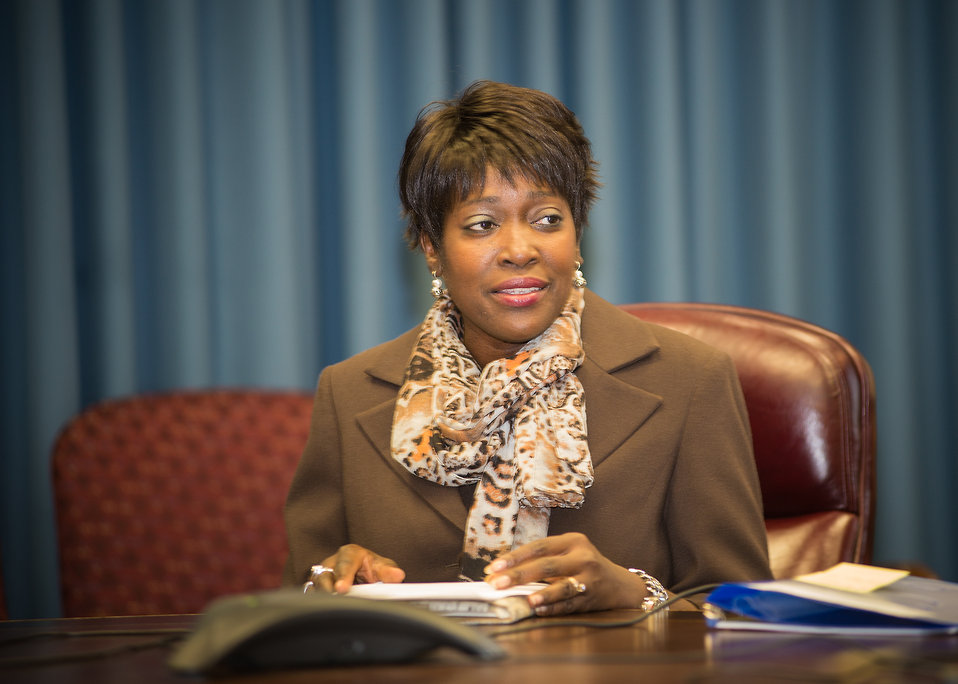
Carolyn Parker, Director, Office of Advocacy and Outreach greeted students interning at USDA for the Fall 2013 semester through the Hispanic Association of Colleges and Universities (HACU) National Internship Program. This program is a partnership between the USDA and HACU that provides an excellent opportunity for the Department to identify highly qualified candidates for future employment. Tue. December 3, 2013 in Washington, D.C.